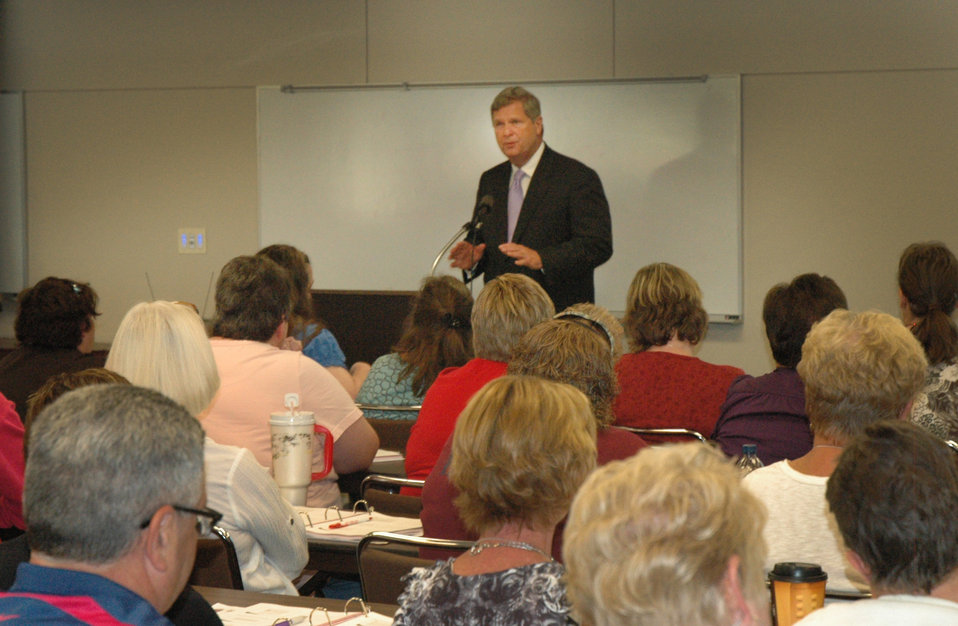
Agriculture Secretary Tom Vilsack made a surprise visit to the School Foods – Healthy Meals Workshop in Ames, Iowa, on Tuesday, July 24, 2012, where more than 100 school food mangers were meeting to discuss Iowa’s school lunch programs. The Secretary told conference attendees that President Obama’s first directive to him when becoming Ag Secretary was to make sure our nation’s children receive proper nutrition through school lunches.